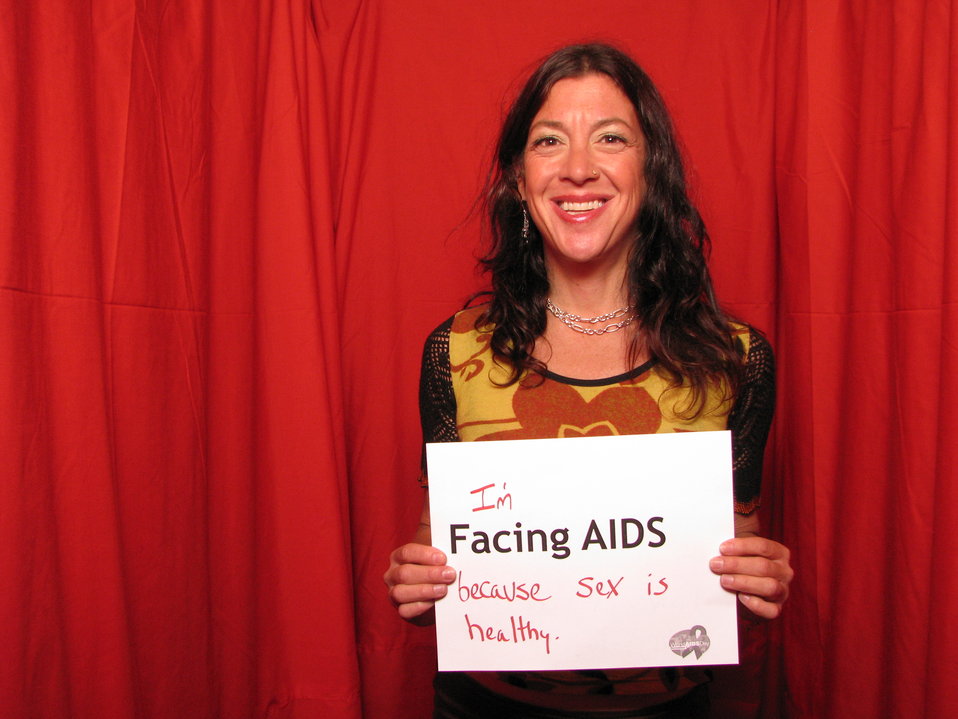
I'm FACING AIDS because sex is healthy.

From the AIDS.gov photo booth at the U.S. Conference on AIDS, September 2010 (Orlando, FL).